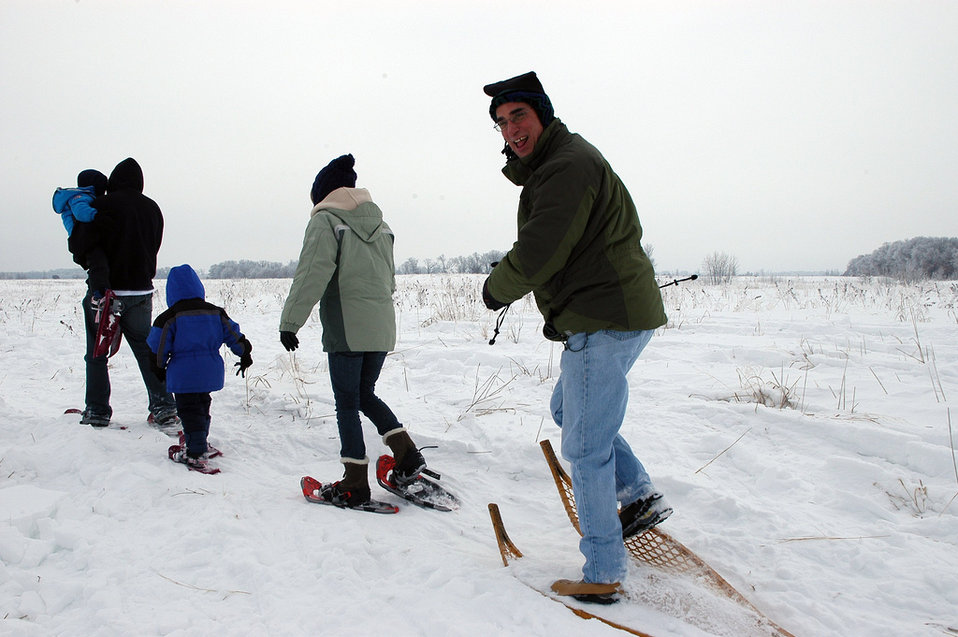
Snowshoeing at Sherburne

USFWS Regional Director Tom Melius joins a group snowshoeing at Sherburne National Wildlife Refuge, MN, during the refuge's 2011 Winterfest.